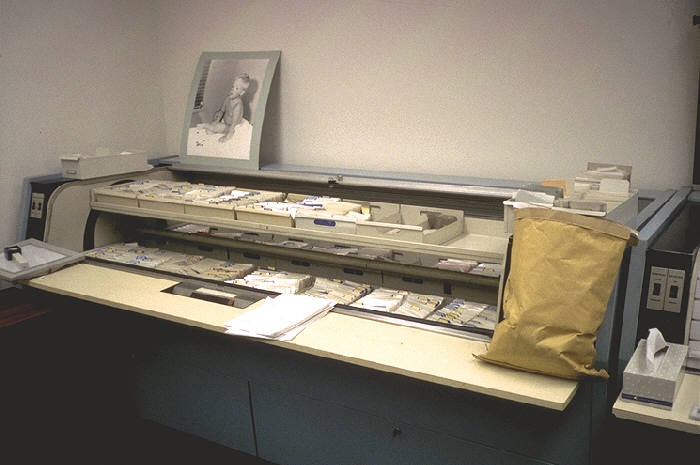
Motorized bin in the former CDC Still Picture Archive, Building 2, Clifton Road.